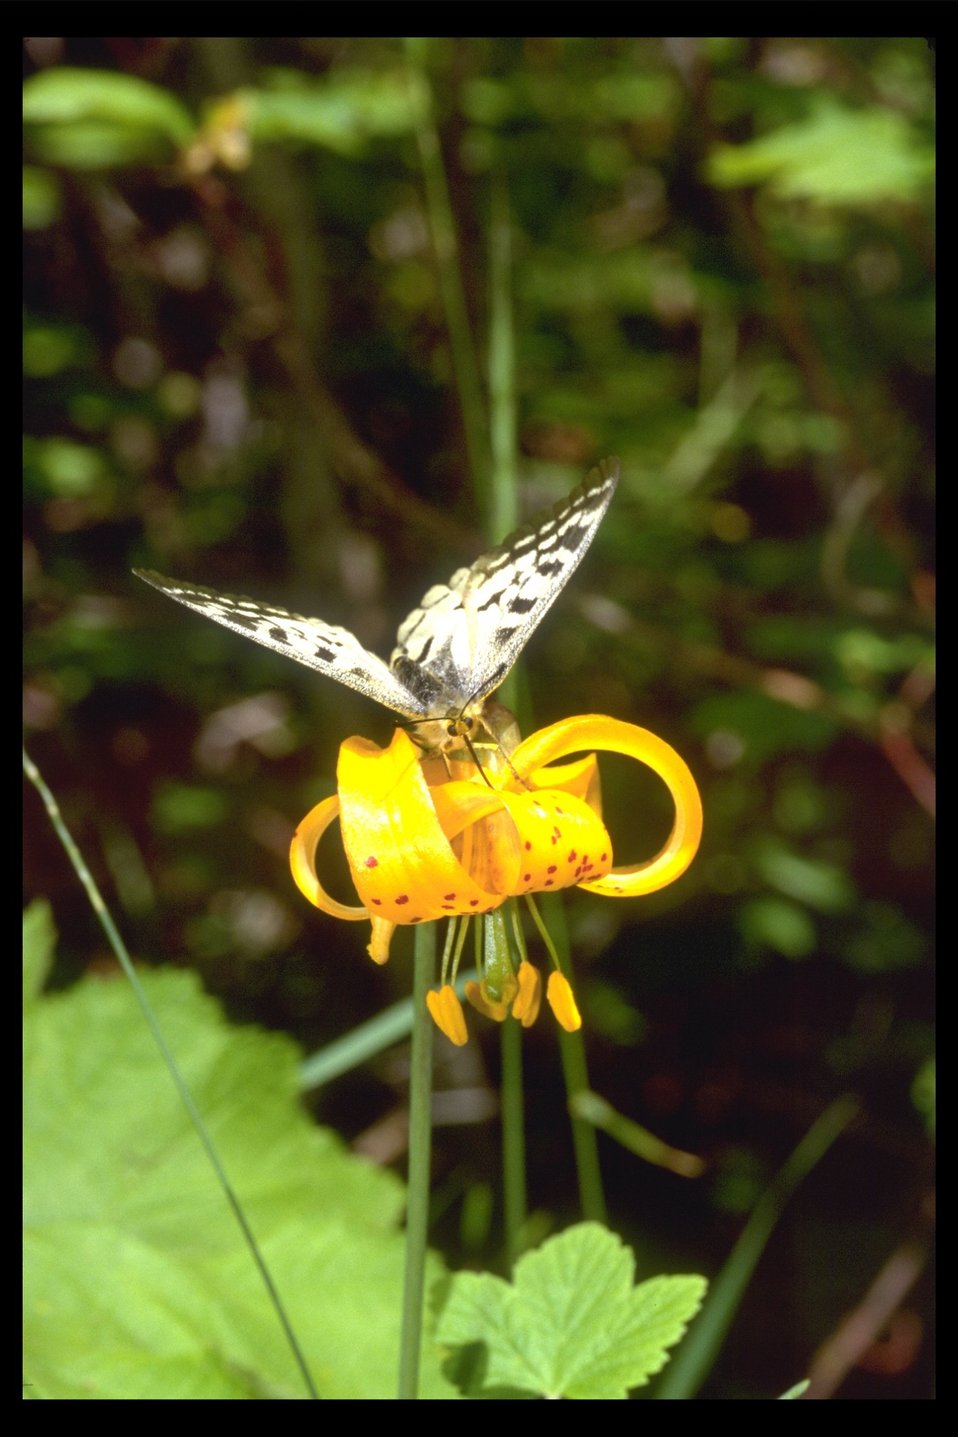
A Tiger Lily (Lilium columbianum) with a butterfly sitting on top. Upper Trail Creek.